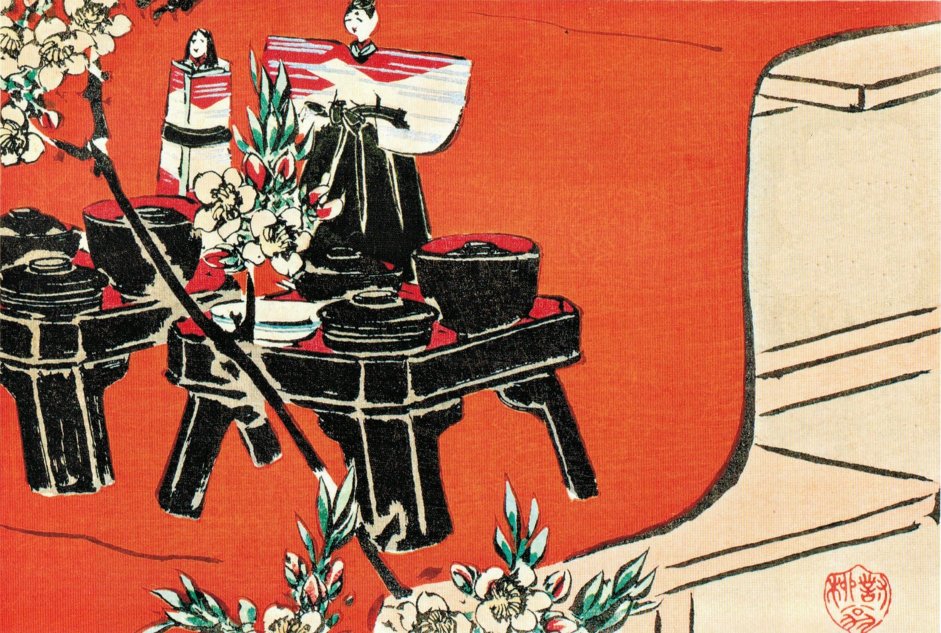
Girls' Festival, woodblock print by Shibata Zeshin, c. 1888, Honolulu Academy of Arts